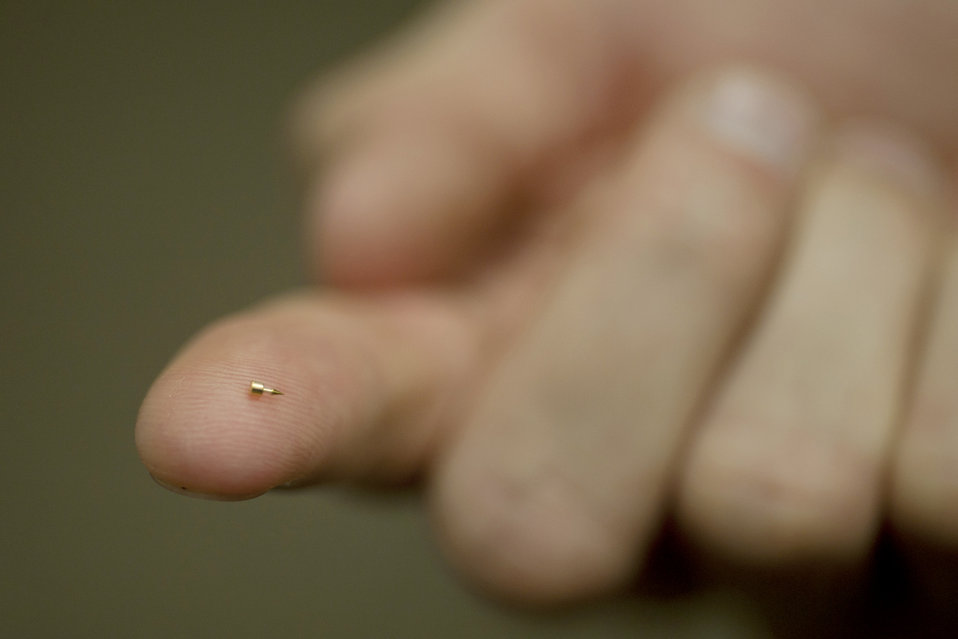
Acupuncture

Capt. Trevor Ambron shows an example of an acupuncture needle Oct. 14, 2010, at Moody Air Force Base, Ga. The needle is especially designed for battlefield use and is smaller than most acupuncture needles. Captain Ambron is an 822nd Base Defense Squadron physician's assistant.